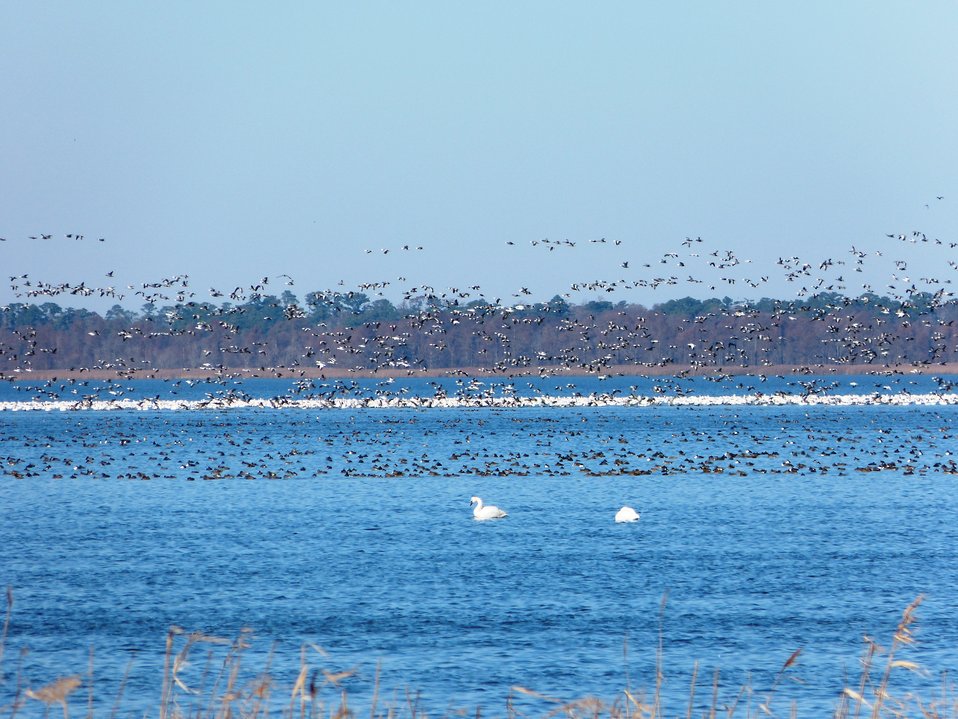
Snow geese and more on the lake

At Mattamuskeet National Wildlife Refuge in North Carolina. The Refuge’s prime location along the Atlantic Flyway makes it a vitally important stopover for wintering waterfowl.